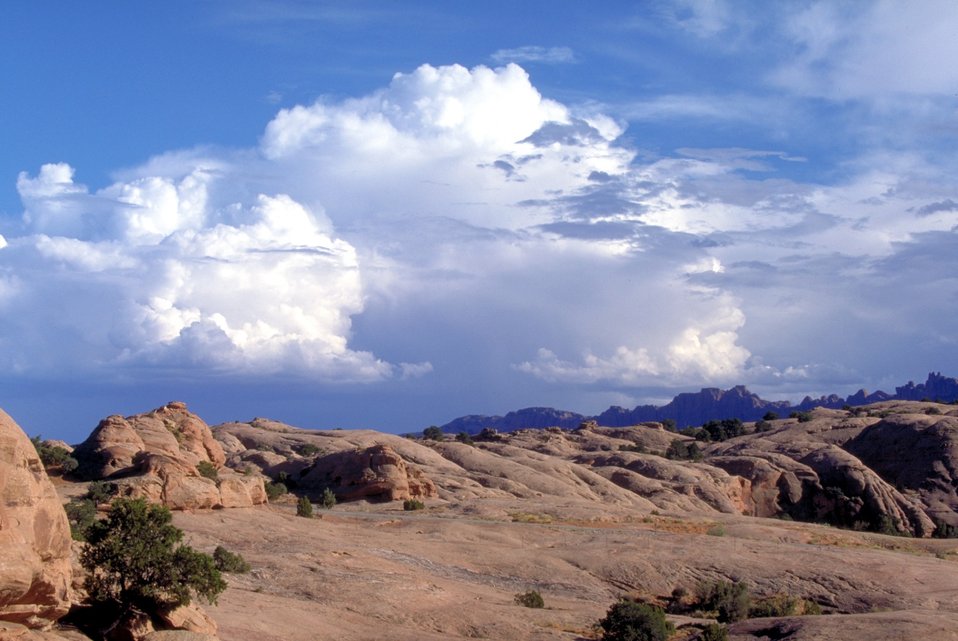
Slickrock and clouds with Behind The Rocks in the background near Moab, Utah.